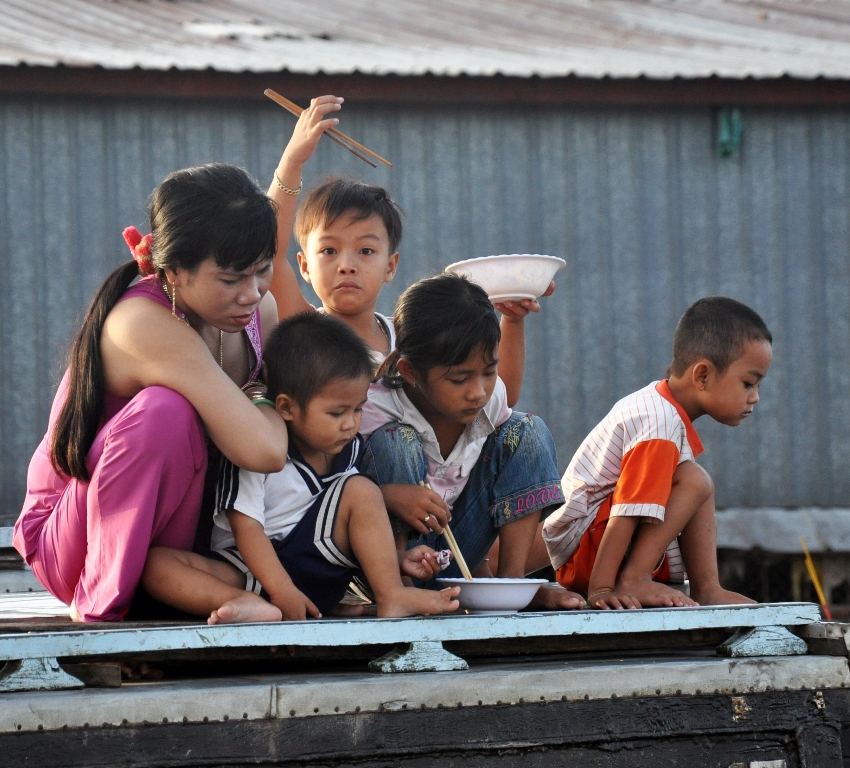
Can Tho floating market

Early morning in Can Tho, Vietnam